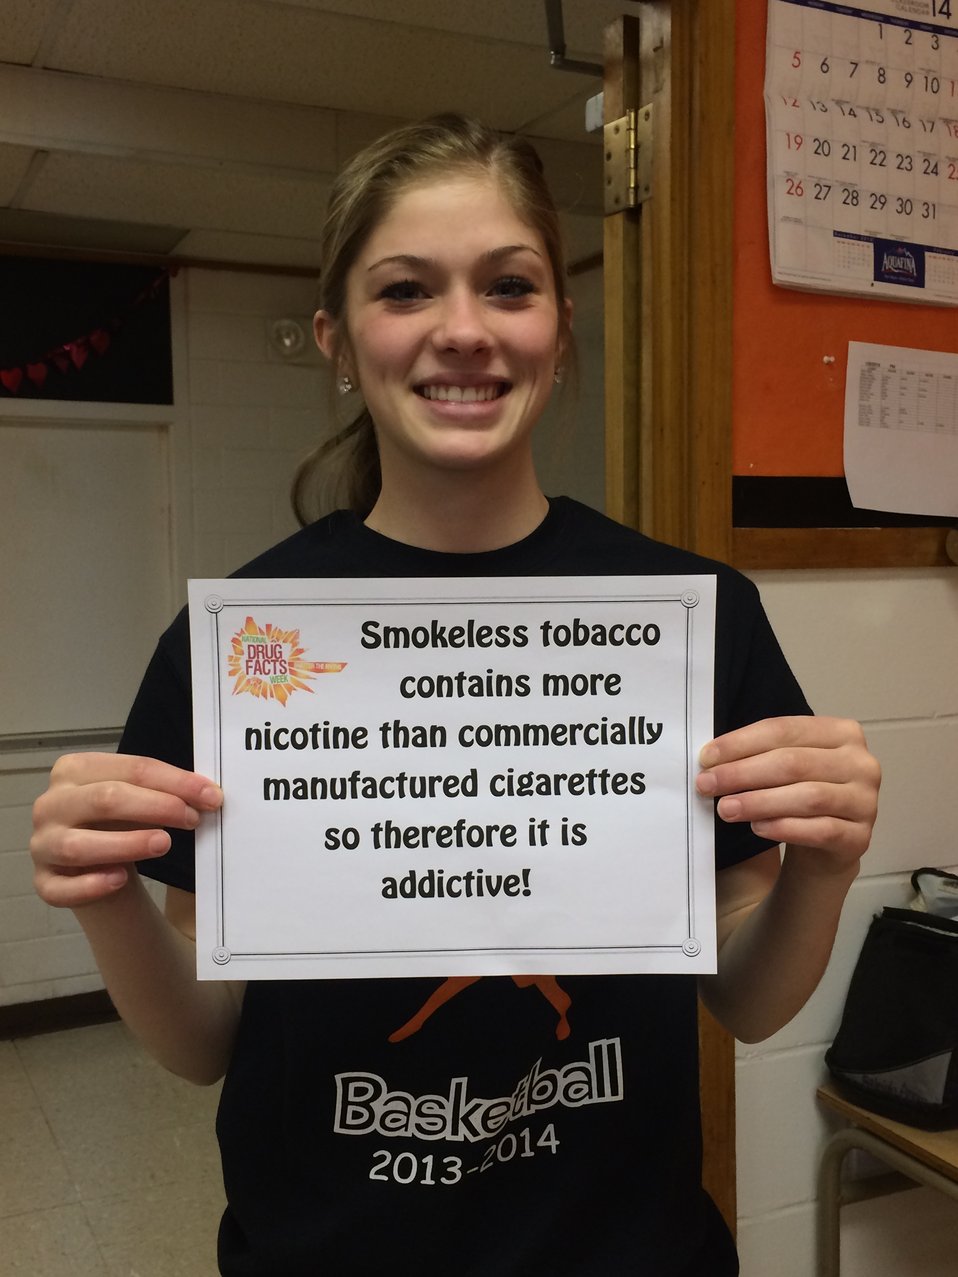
Just the Facts: 2014 NDFW

Teenagers from the Van Buren County SAFE Coalition's, Youth Leadership Council (YLC) in Keosauqua, Iowa participate in various events during National Drug Facts Week, 2014.